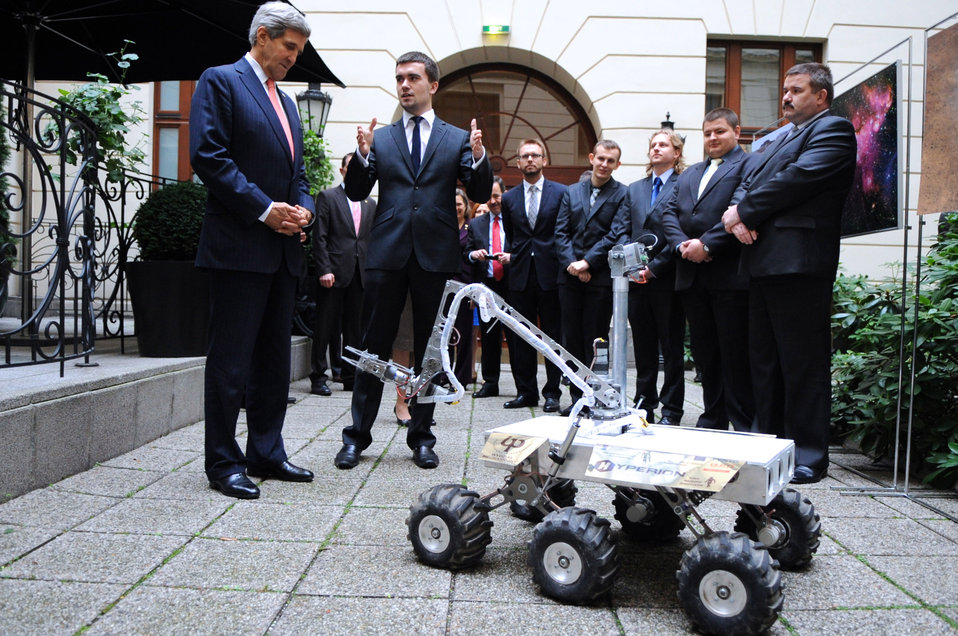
Secretary Kerry Meets With Polish Builders of the Mars Rover Model

U.S. Secretary of State John Kerry listens as a Polish student explains his group's development of a Mars Rover model in Warsaw, Poland, on November 5, 2013.